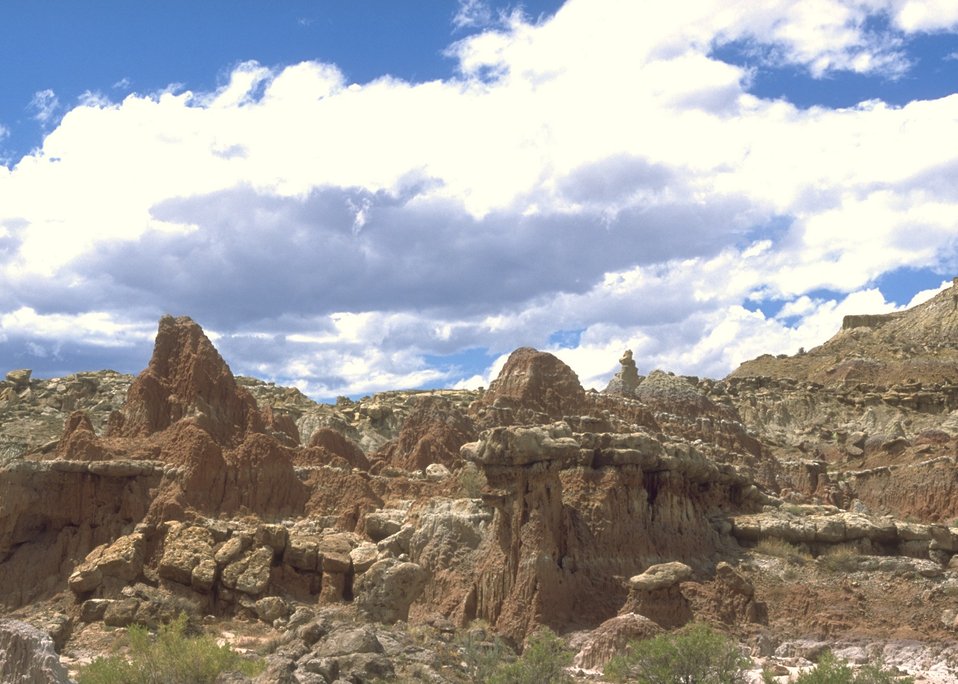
Gooseberry Interpretive Area, Worland Field Office.